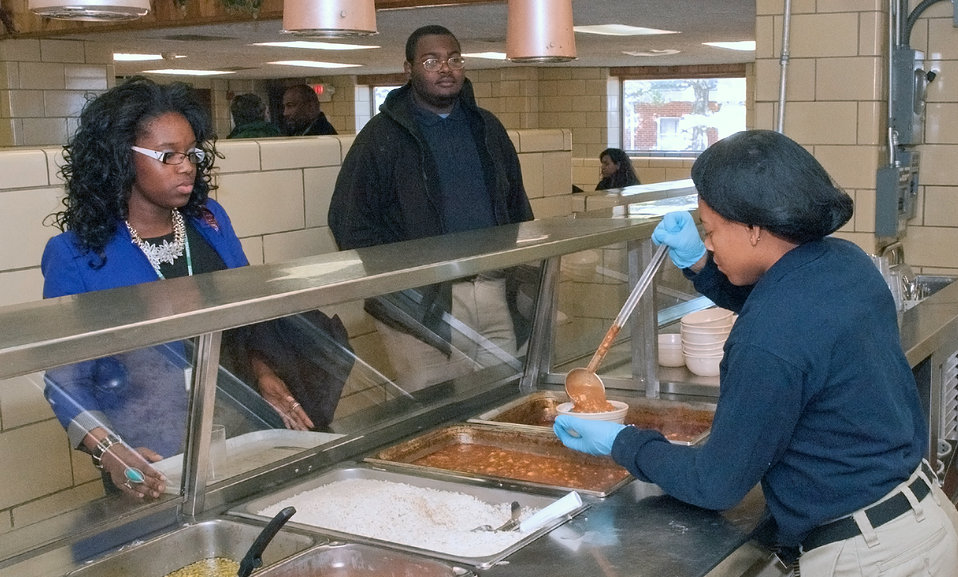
Student Me'ana Shields serves other students on Nov. 8, 2012 at the Job Corps Civilian Conservation Centers Harpers Ferry, WV. The US Forest Service manages 28 Job Corps Civilian Conservation Centers.